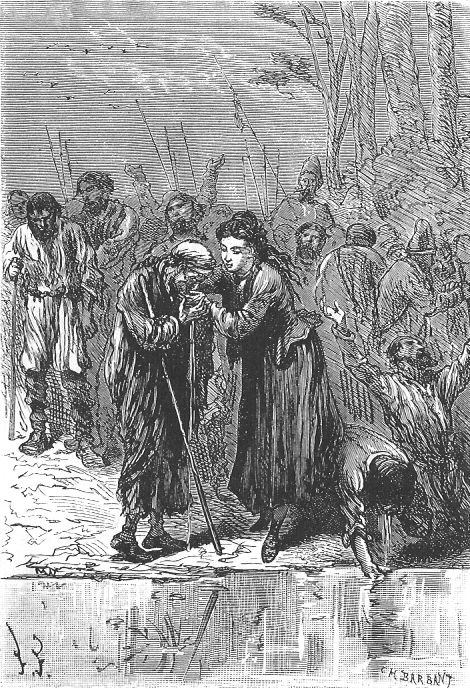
An illustration from the novel 'Michael Strogoff: The Courier of the Czar' by Jules Verne drawn by Jules Férat. Polski: Ilustracja powieści Juliusza Verne'a 'Michał Strogow, kurier carski' autorstwa Julesa Férata. Français : 'Michel Strogoff. Le courier du tzar', Jules Férat. Français : Elles venaient boire à leur tour.